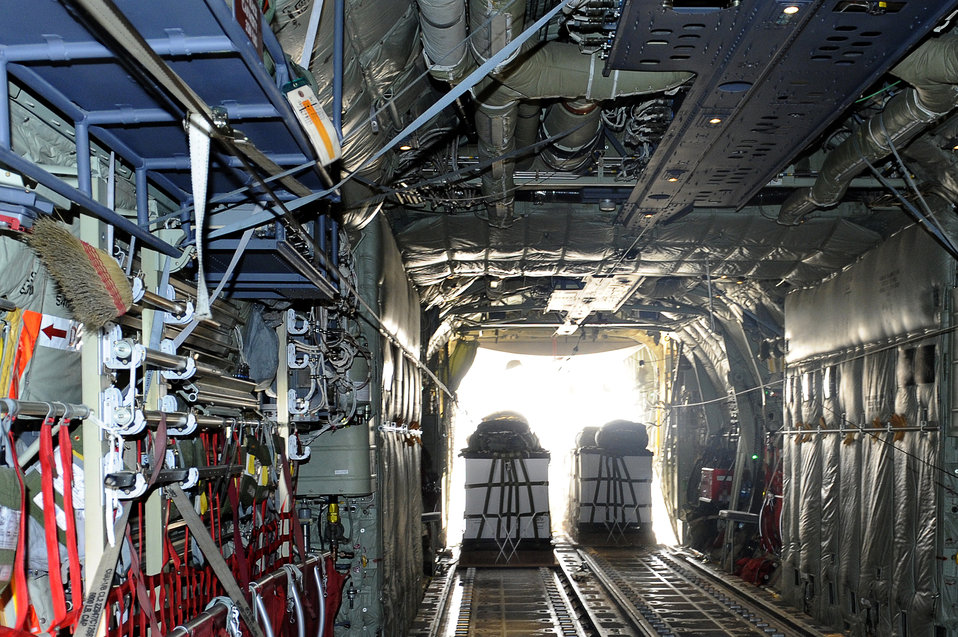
C-130J delivers supplies over Afghanistan

U.S. Air Force Airmen conduct an airdrop over Afghanistan, March 2, 2010.